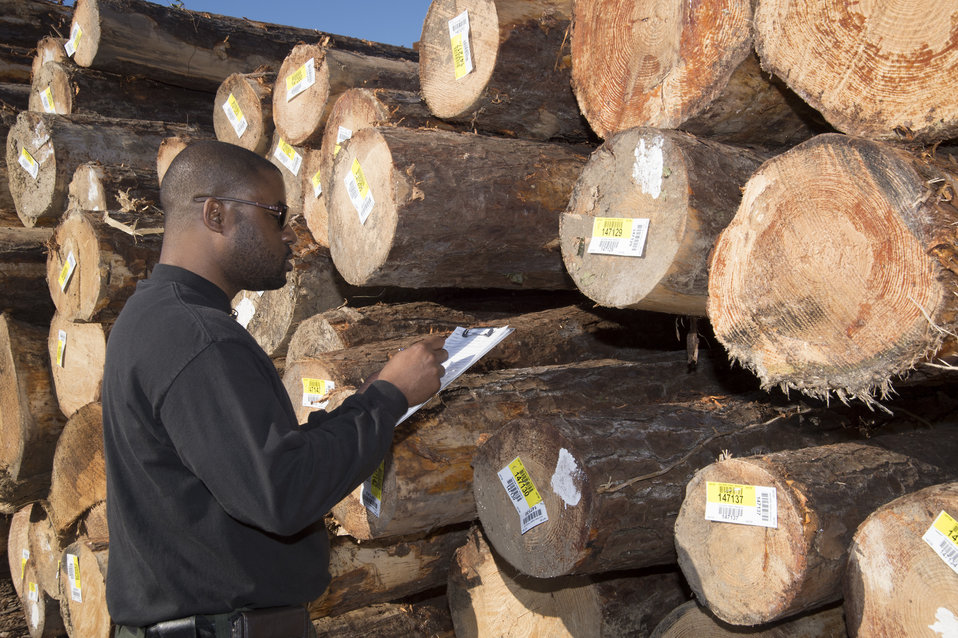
U.S. Department of Agriculture’s (USDA) Animal and Plant Health Inspection Service (APHIS) employee inspects fumigated logs near the Port of New Orleans in New Orleans, LA on Wednesday, Nov. 20, 2013. The fumigation process prevents the spread of any bacteria or insect that might cause harm to a foreign country’s agriculture.